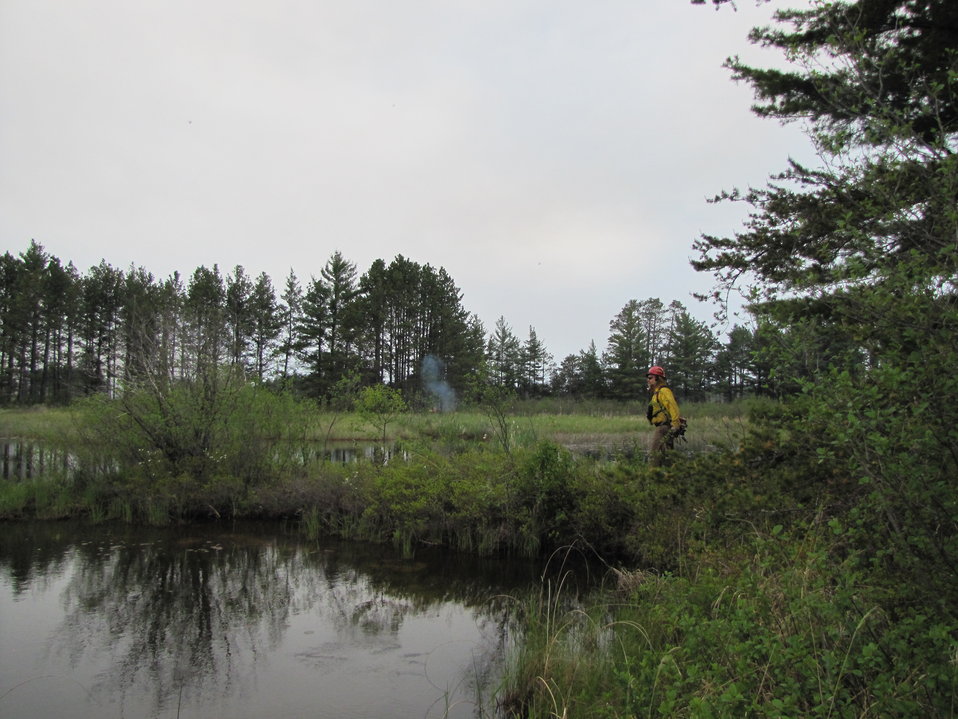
The Hand Crew in Action

Lighting a back fire off Pine Creek Road to keep the main fire contained.